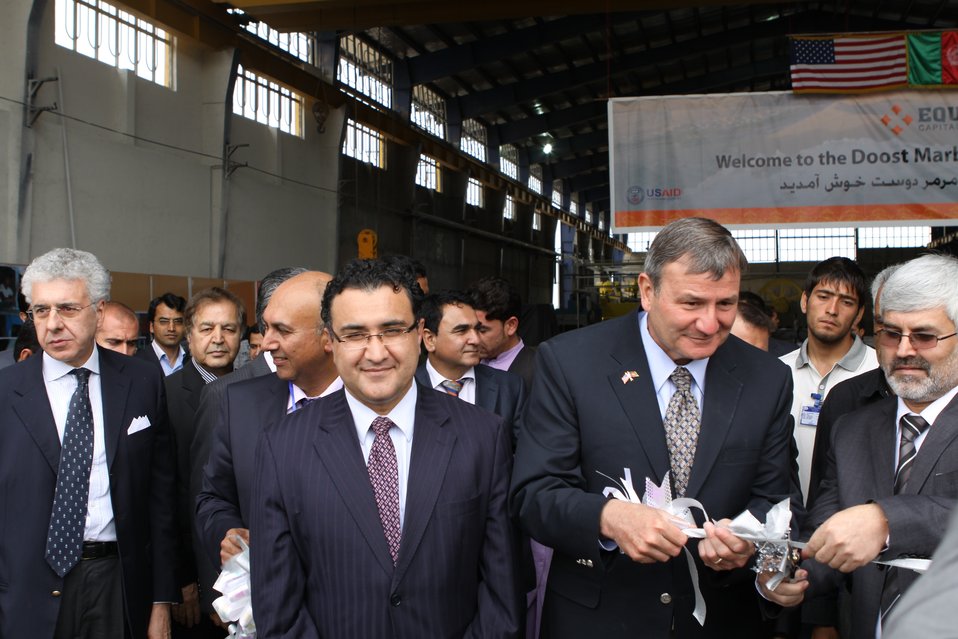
100525 Hirat Marble Conference 080